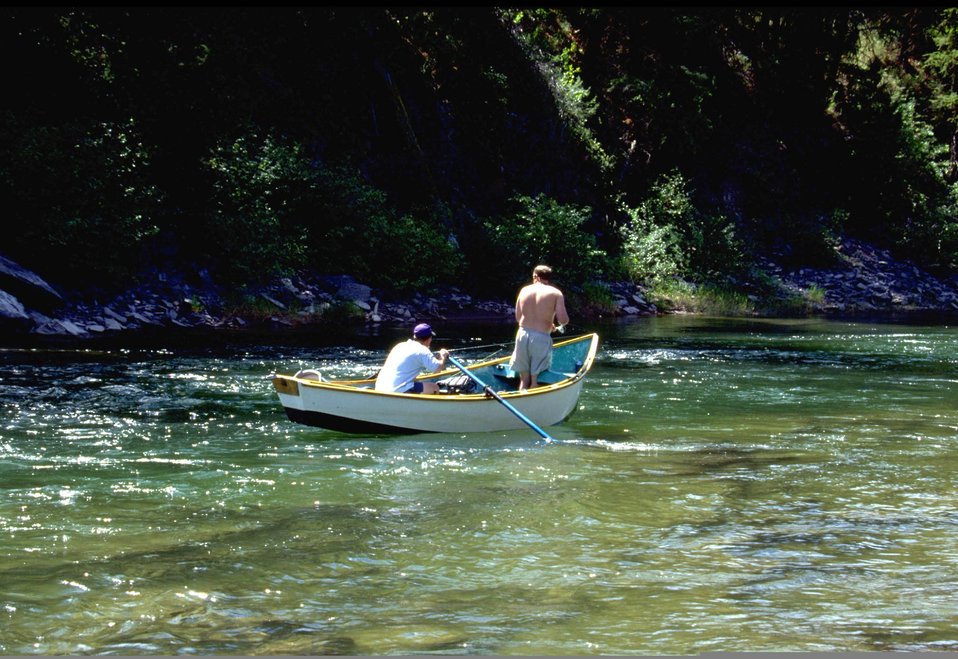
Fishing on the Blackfoot River